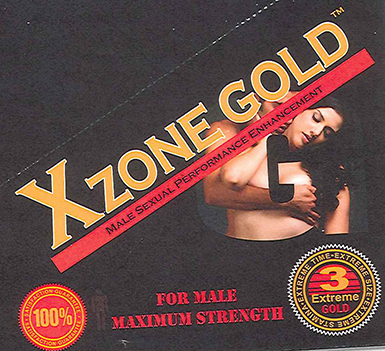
RECALLED – Dietary Supplement

April 1, 2014 – Product Recall – Nova Products, Inc. Issues Voluntary Nationwide Recall of Dietary Supplements with Undeclared Active Pharmaceutical Ingredients.